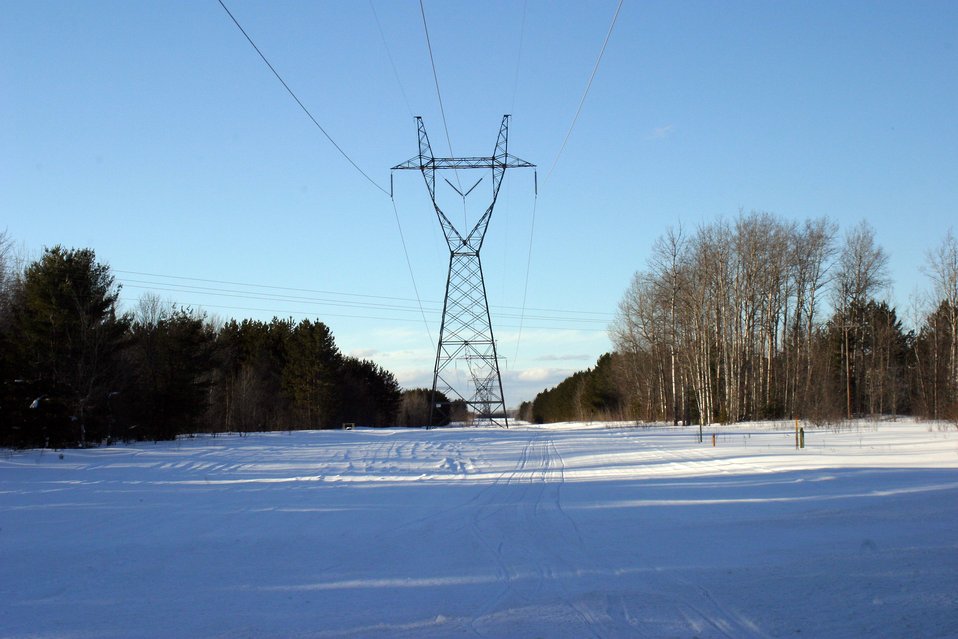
Power lines in Gaylord, Michigan.